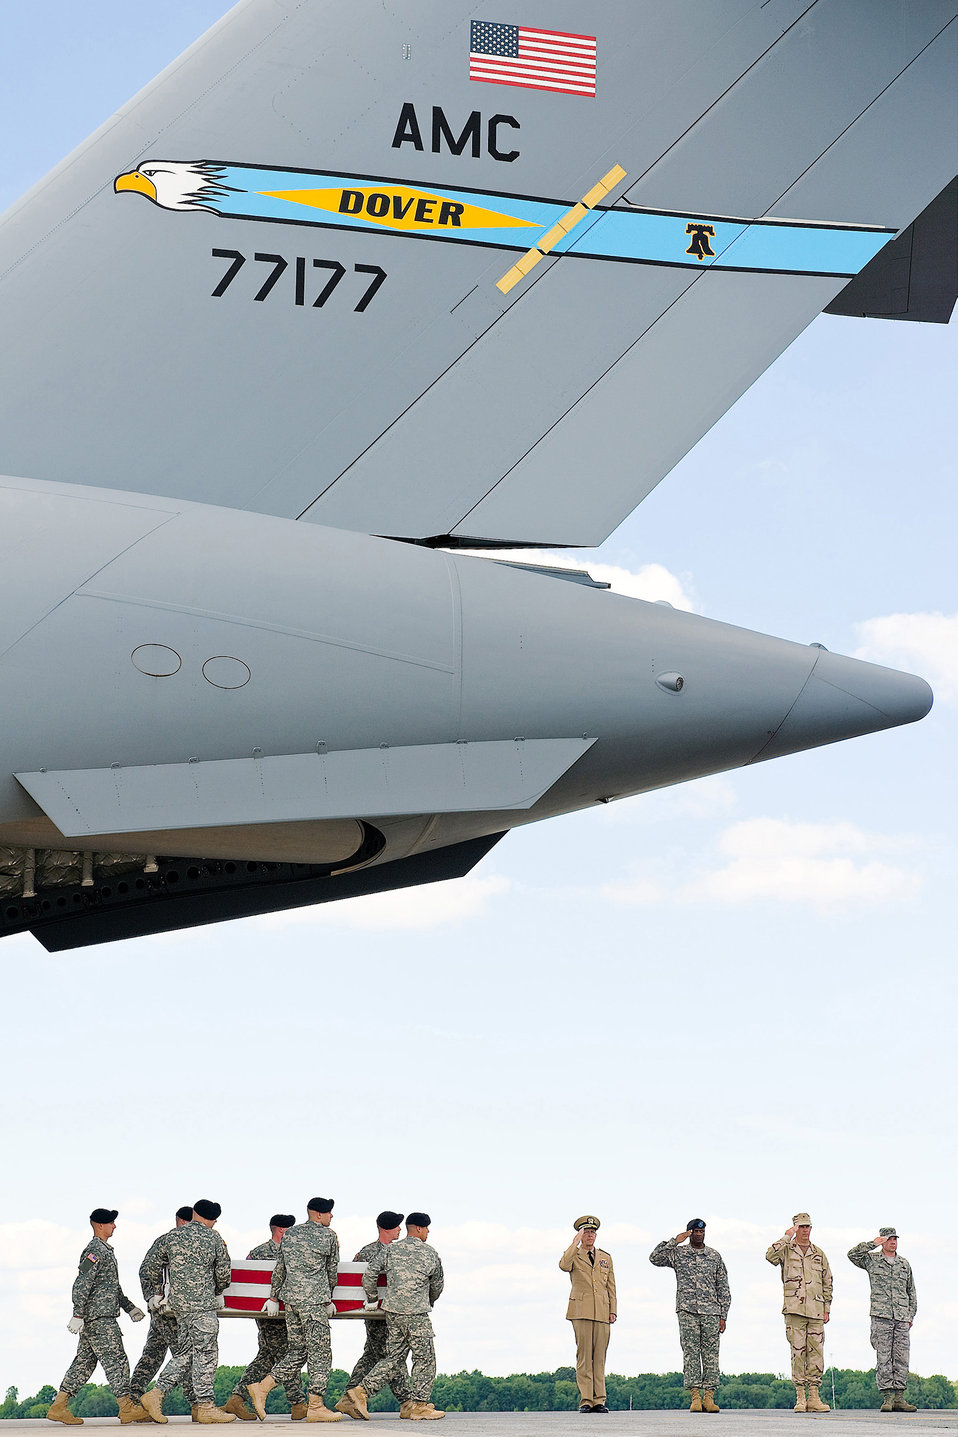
Returning with honor

Navy Adm. Mike Mullen, Navy Rear Adm. James J. Shannon, Army Brig. Gen. Michael T. Harrison Sr. and Col. Manson Morris pay their respects as an Army carry team transfers the remains of Army Capt. Mark A. Garner July 8 at Dover Air Force Base, Del.